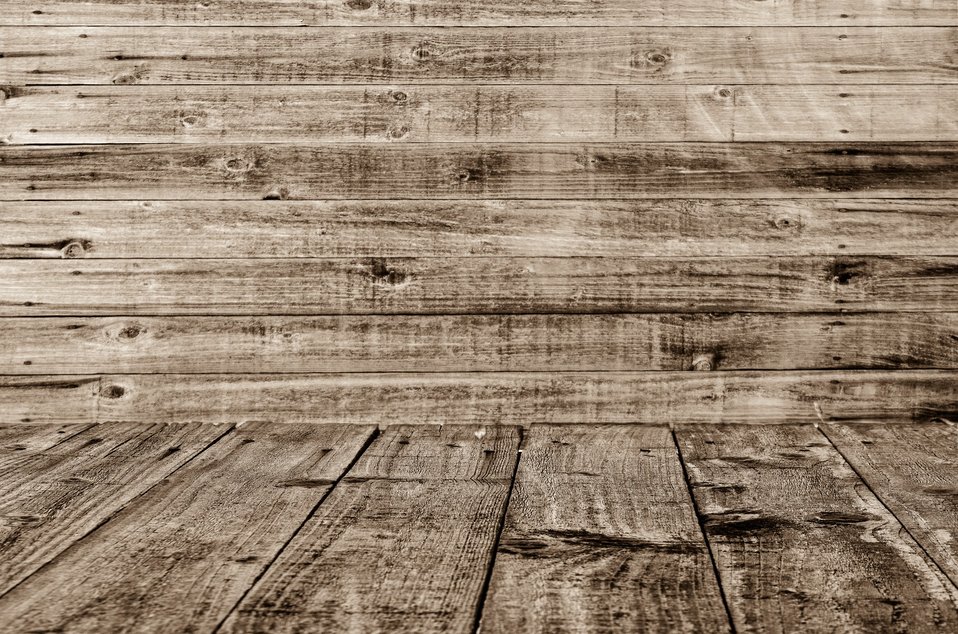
Wooden floor and wall background.